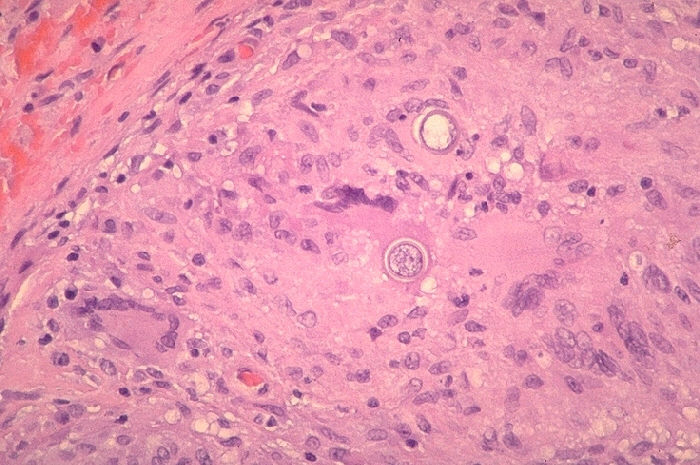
Histopathology of coccidioidomycosis, retroperitoneal area.